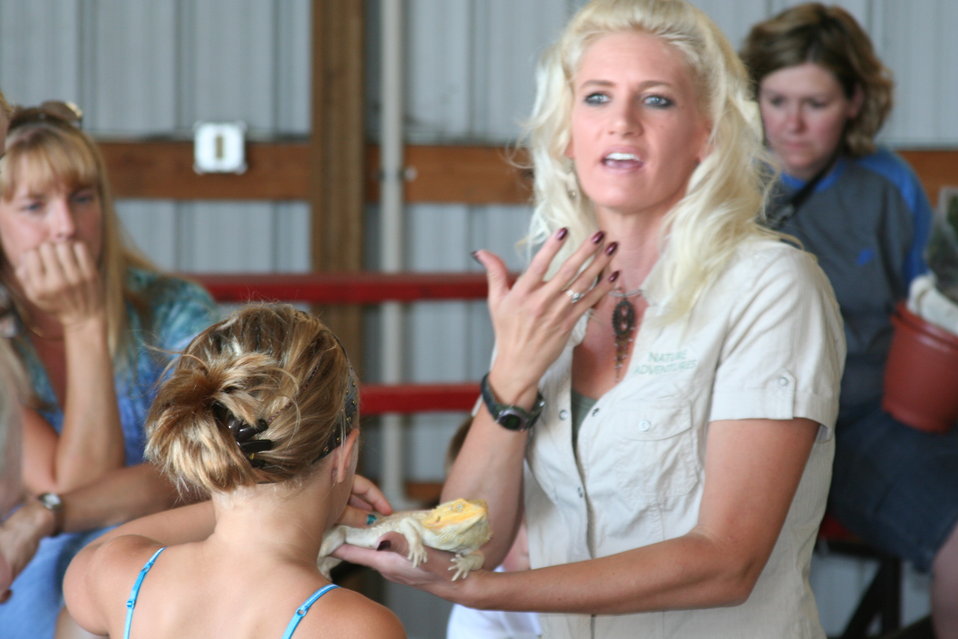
2011 Huron Prairie Fest

Terri with a lizard.